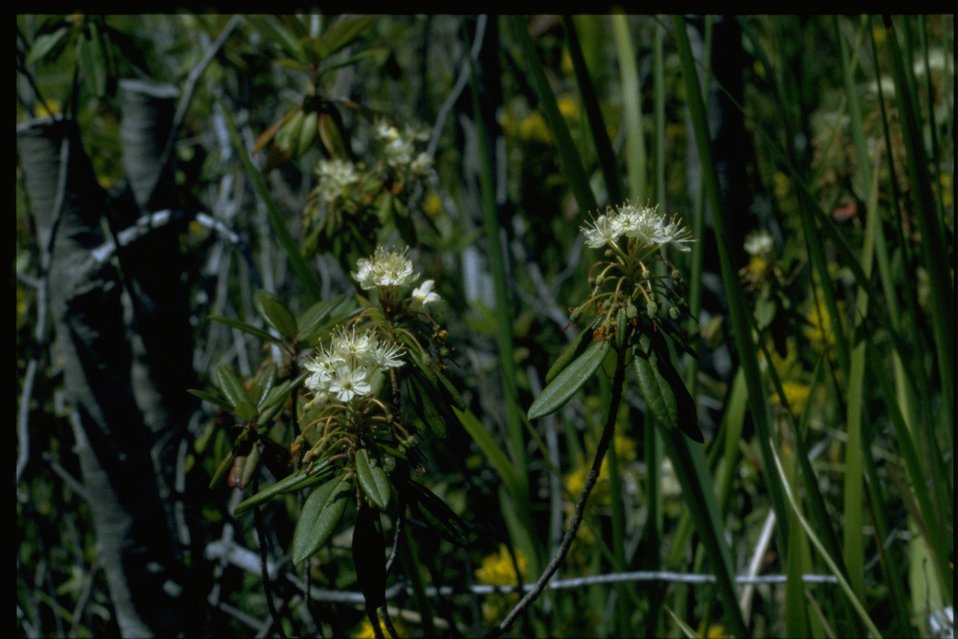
Medium shot of Ledum glandulosum.